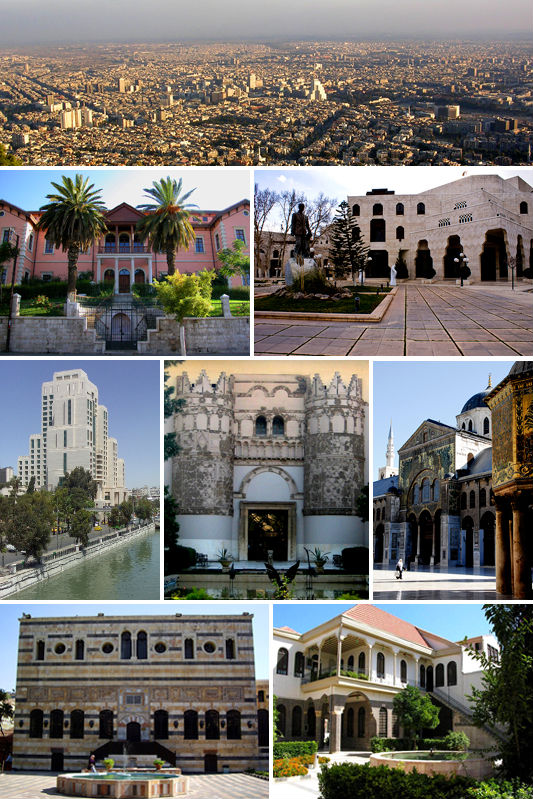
1st row: Damascus skyline - 2nd row: Damascus University, Damascus opera house - 3rd row: Four Seasons Hotel and Barada River, Syrian National Museum (Qasr Al-Hayr AL-Gharbi Facade), Omayyad Mosque - 4th row: Al-Azem Palace, Maktab Anbar.